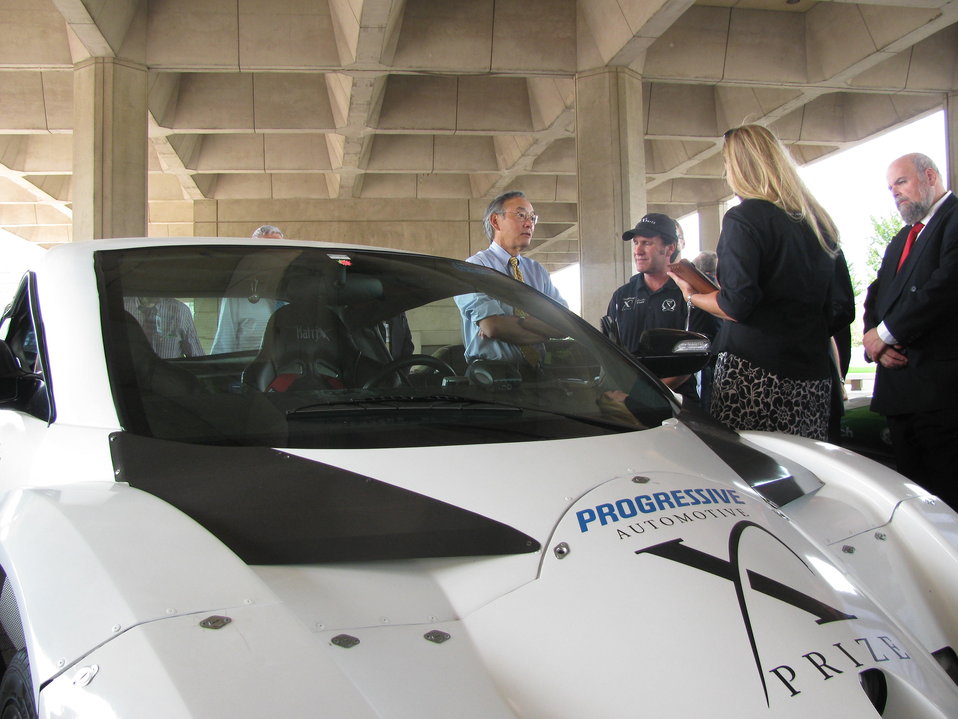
X Prize 018